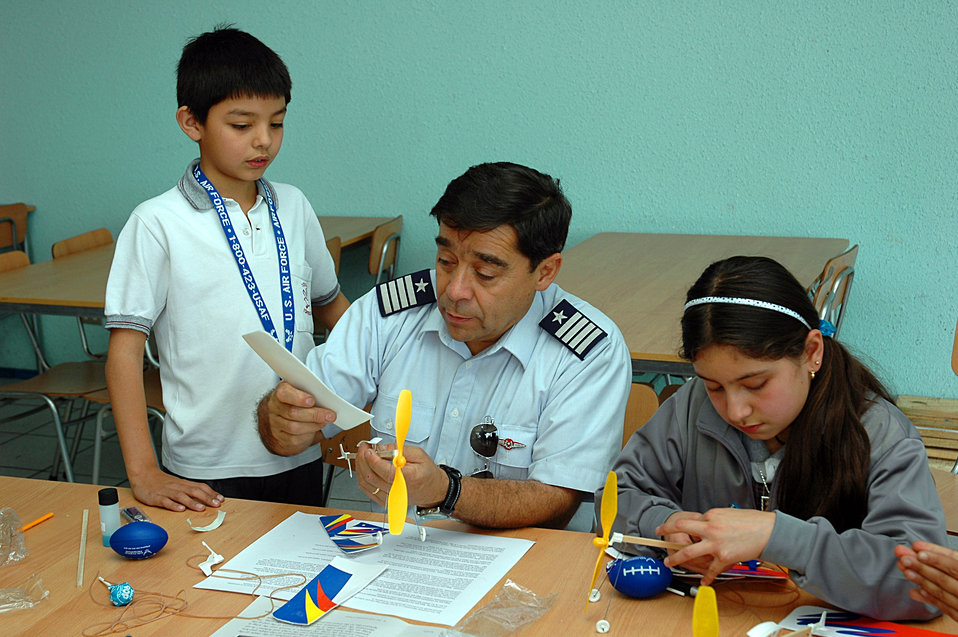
Airmen, Chilean school 'partner' to teach children aviation

Col. Duncan Silva, Chilean air force director of public affairs, demonstrates model building Oct. 27 to Chilean children during an afterschool science program. The Chilean air force teamed up with members of Air Forces Southern, U.S. Embassy and Military Group, along with civilian volunteers from the Santa Clara, Calif.-based technology firm Agilent Technologies. The event is part of community outreach efforts complementing Operation Southern Partner, an AFSOUTH-led event aimed at providing intensive, periodic subject matter exchanges with partner nations in the U.S. Southern Command area of focus. The all-new program features more than 70 U.S. Air Force subject matter experts from about 25 career fields working alongside partner nation military members in similar career specialties during week-long exchanges.